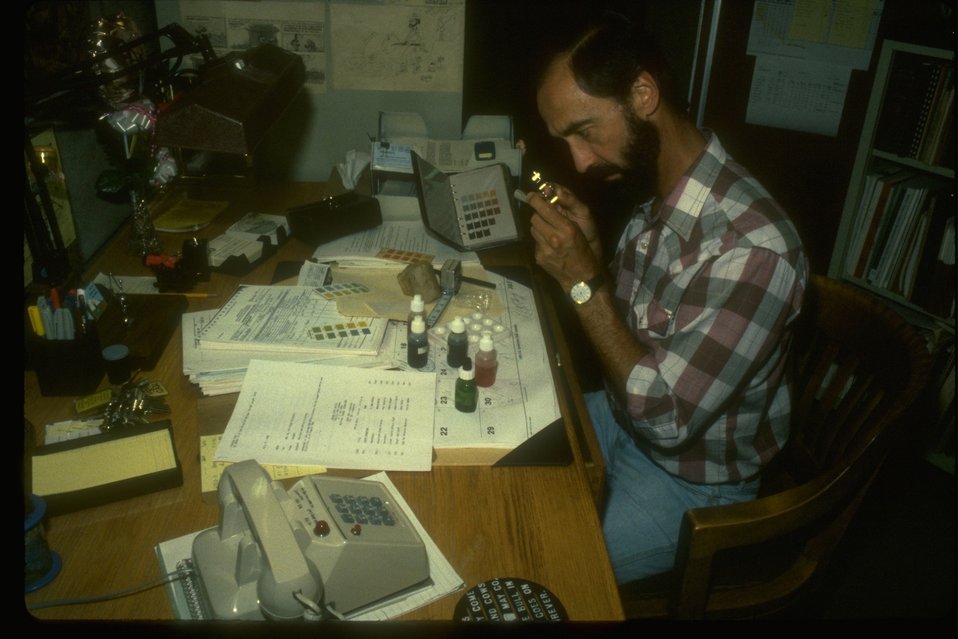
A soil scientist studying soil samples.